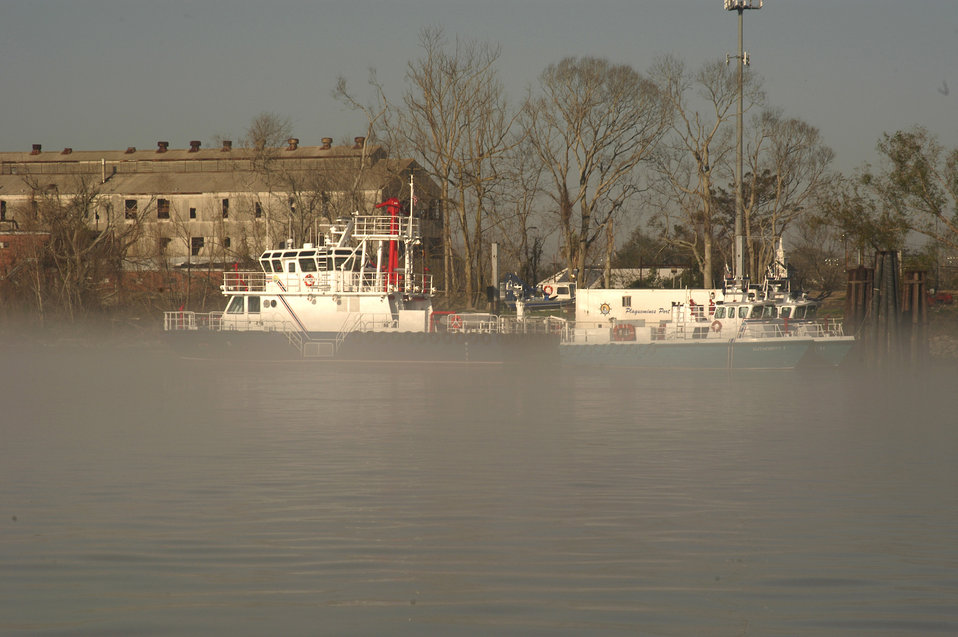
Plaquemines Port Harbor Authority patrol boats are visible through an early morning mist rising on the Mississippi River in Plaquemines Parish, LA. The Harbor Authority building behind the boats was destroyed by Hurricane Katrina. Katrina made landfall on Monday morning, August 29, 2005 as a Category 3 hurricane with sustained winds of 125 mph with over a 20-foot storm surge. Katrina caused catastrophic damage over 90 thousand square miles across Louisiana with an estimated $75 billion dollars in damage. The total economic impact to the Gulf Coast was estimated at over $150 billion. 80% of New Orleans, LA, was underwater with some areas more than 20 feet deep. Less than a month later southern Louisiana was struck by a second Category 3 hurricane Rita inflicting more damage in the southwestern areas of Louisiana adding an addition $12 billion worth of damage to the already beleaguered state. The U.S. Army Corps of Engineers (USACE) under the auspices of Federal Emergency Management Agency (FEMA) was the lead service in providing assistance to the citizens of Louisiana. The U.S. Department of Agriculture (USDA) supplied emergency food aid, emergency loan assistance to farmers and home owners, and USDA personnel from around the nation volunteered their time and muscle to aid in the recovery operations.